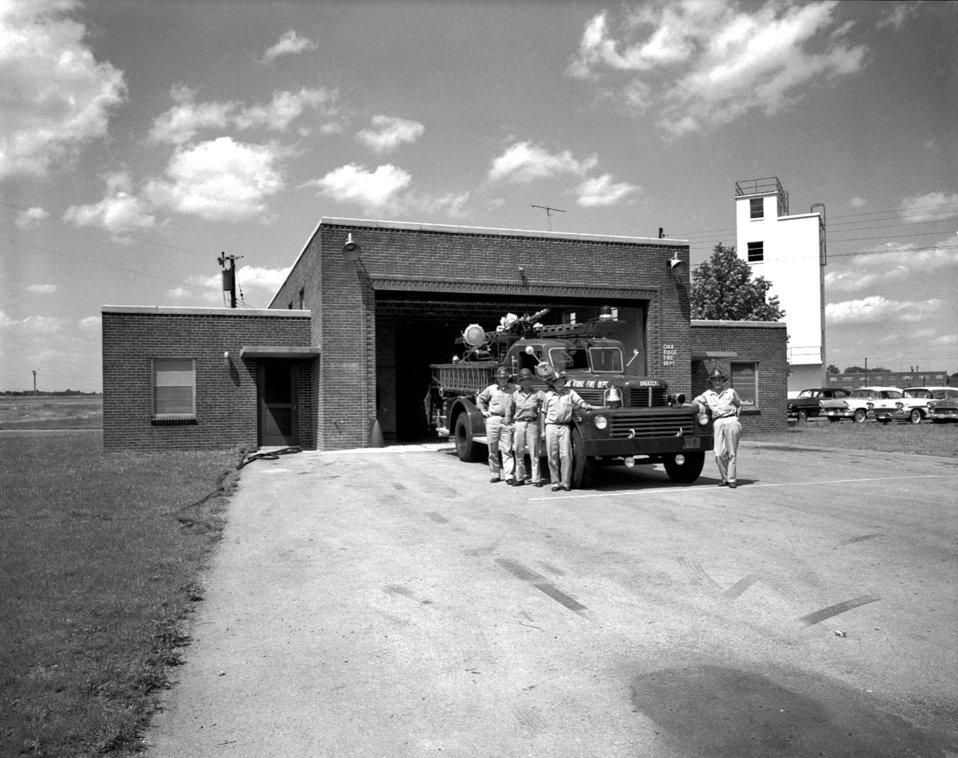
Fire Station South Ill. Ave. Moore Oak Ridge

60-0451 DOE photo by T.R. Cook

Fire Station South Ill. Ave. Moore Oak Ridge Tennessee 5/31/1960